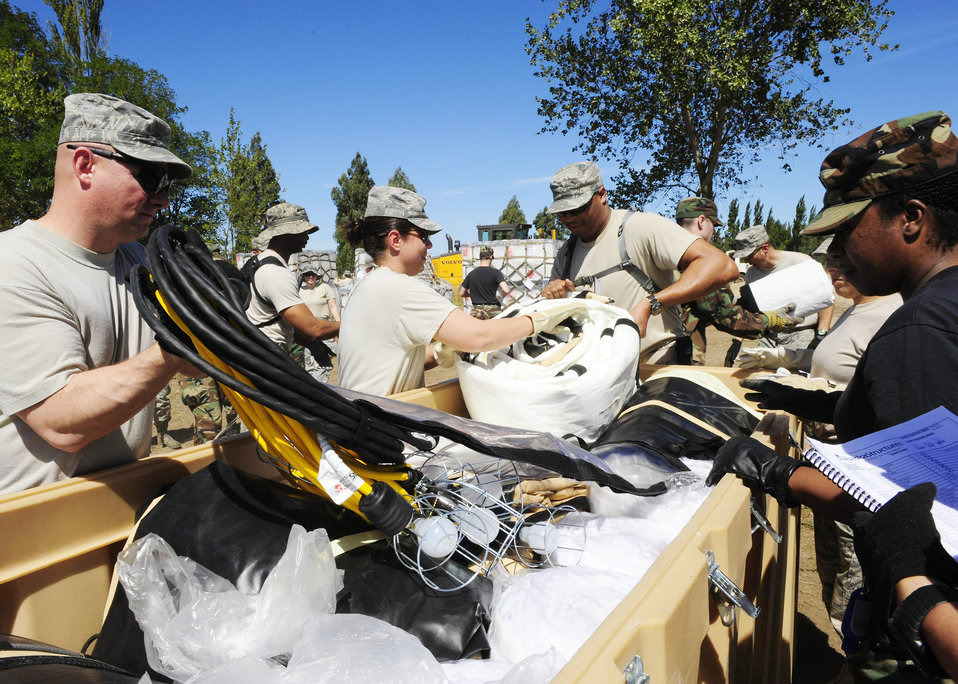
Airmen build hospital in Chile

Airmen from an Air Force Expeditionary Medical Support team unload supplies for mobile hospital March 10, 2010, in Angol, Chile. The EMEDS staff and members of the Chilean army built the hospital to help augment medical services for nearly 110,000 Chileans in the region. The EMEDS team is equipped and staffed to provide surgical, primary care, pediatric, radiological, gynecological, laboratory, pharmaceutical and dental services.